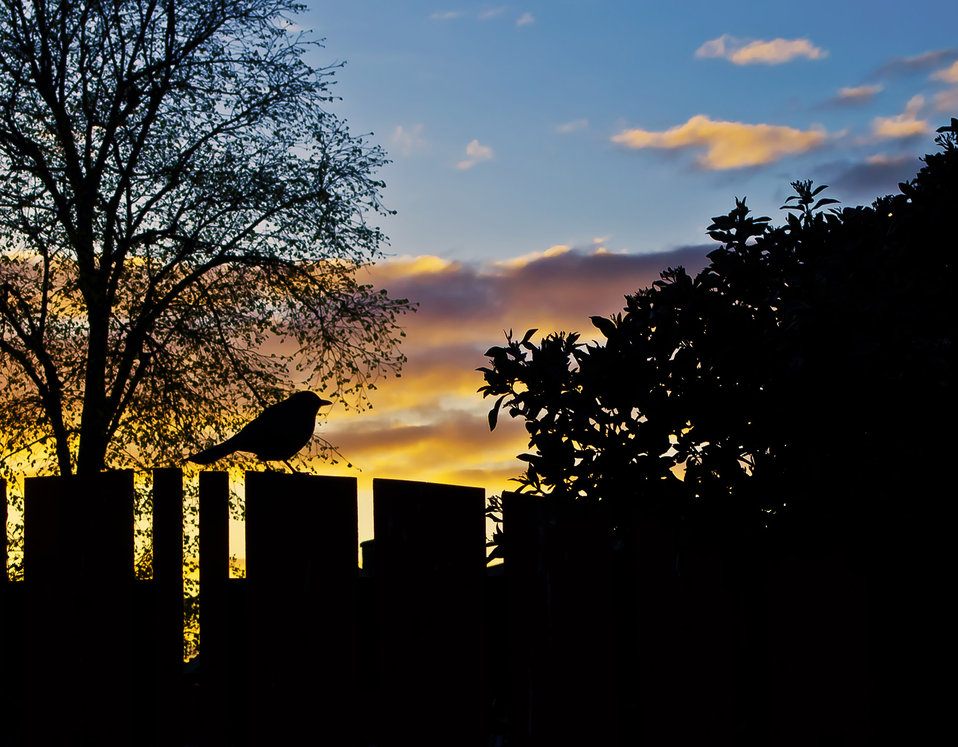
Sunset - background.